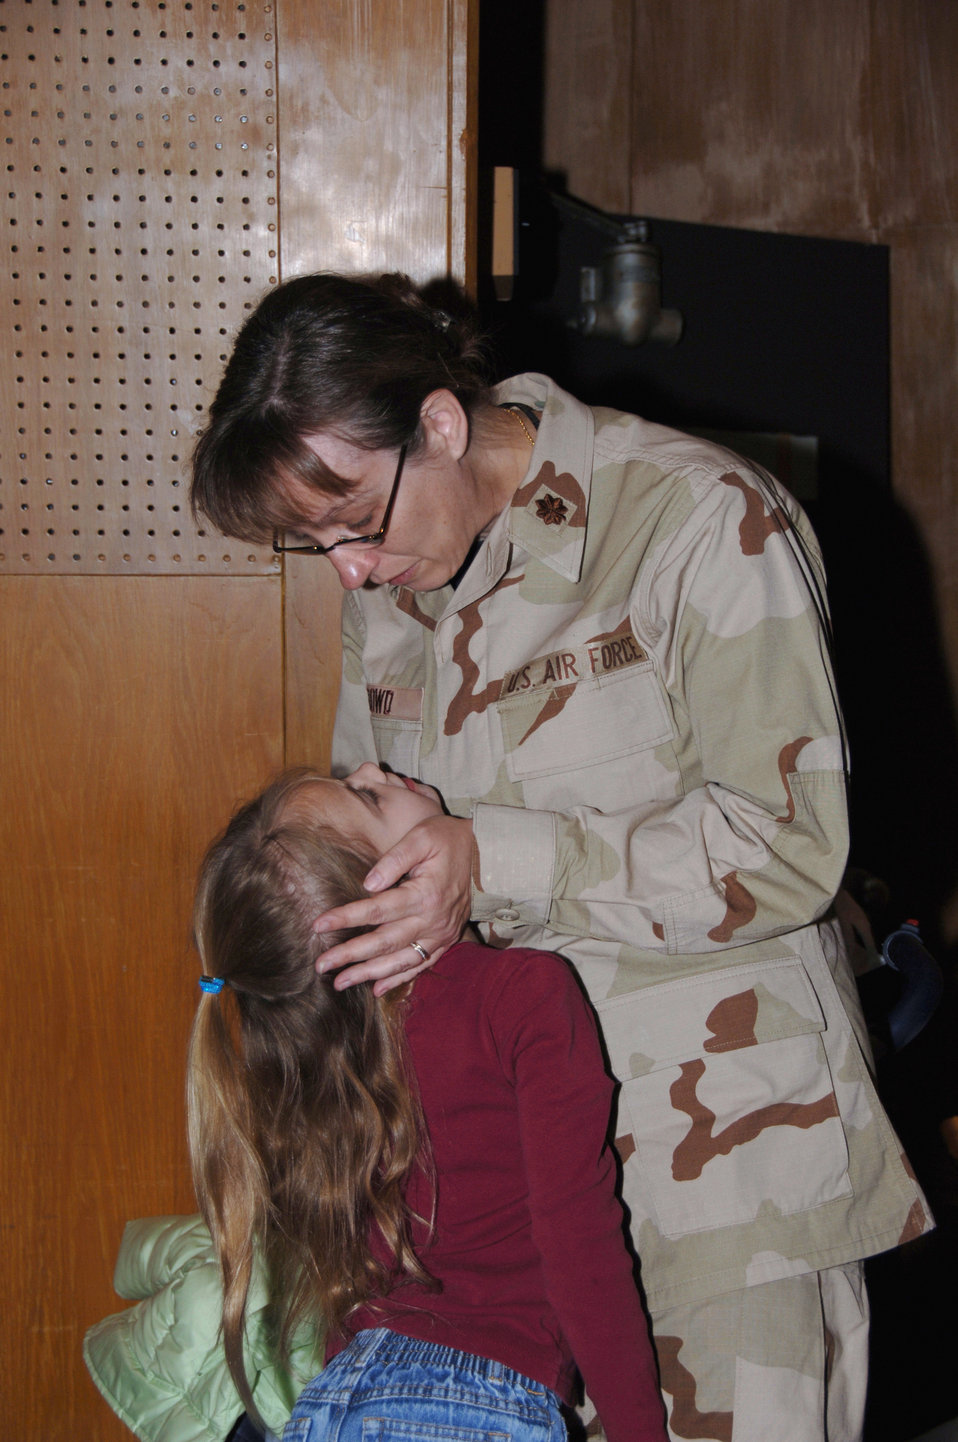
Wilford Hall medics depart for Iraq

Maj. Maryann Dowd reminds her daughter, Rachael, to behave while she's gone, as the two say goodbye Jan. 9 in the Wilford Hall auditorium in San Antonio. Major Dowd is one of more than 60 59th Medical Wing Airmen who are deploying to Balad Air Base, Iraq, to man the Air Force Theater Hospital there.